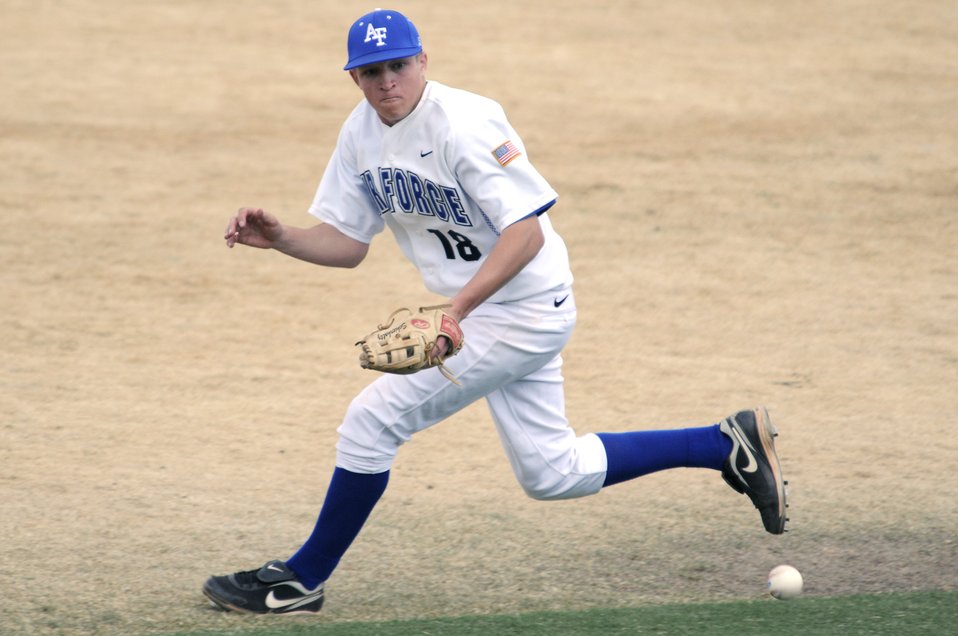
US Air Force Academy, CO

Sophomore shortstop Vai Schierholtz runs down a grounder during the 11-7 win against Colorado Christian at Falcon Field March 17. The win improved the Falcons record to 6-9 on the season. Air Force returns to action with a three-game series at UNLV starting Friday, March 20.